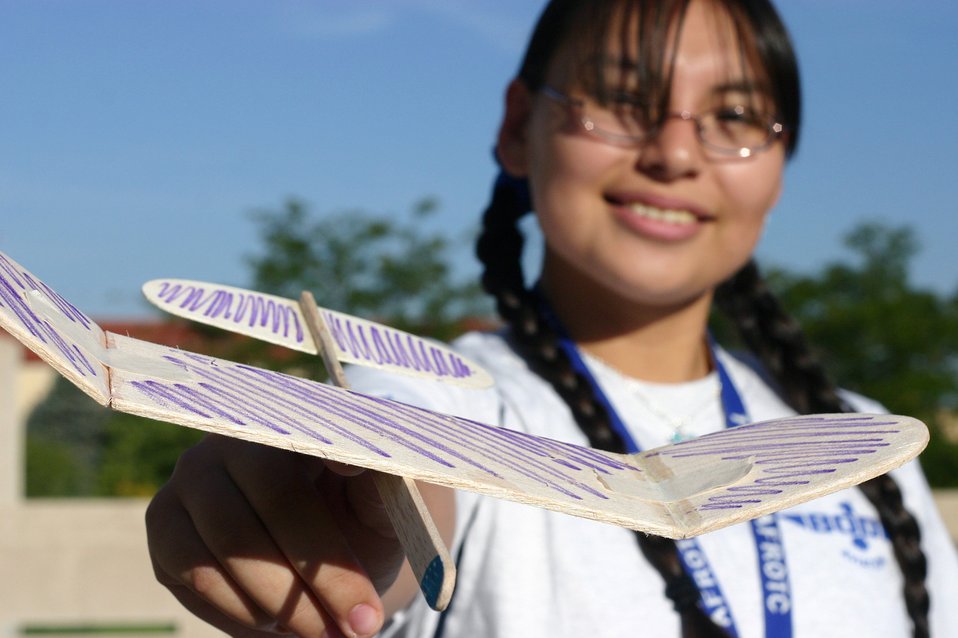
Top Junior ROTC cadets explore AF opportunities

Air Force Junior ROTC Cadet Rosa Lopez from Texas shows off her team's handmade glider during the Air Force Junior ROTC Aerospace and Technology Honor Camp July 31 at Albuquerque, N.M. More than 450 cadets from Junior ROTC units worldwide participated in a total of eight camps with 54 students each - half at Albuquerque. and half at Norman, Okla., and Tinker Air Force Base. Currently, there are more than 100,000 cadets in the Air Force Junior ROTC program worldwide.